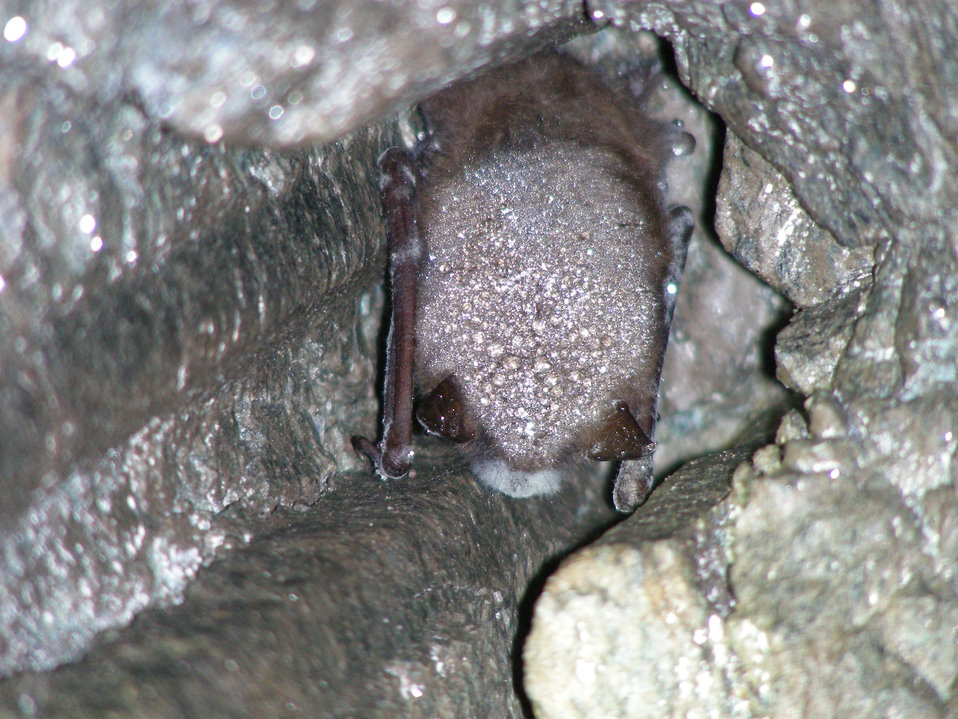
Little brown bat affected by White-nose Syndrome

Little brown bat with white-nose syndrome in Greeley Mine, Vermont, March 26, 2009